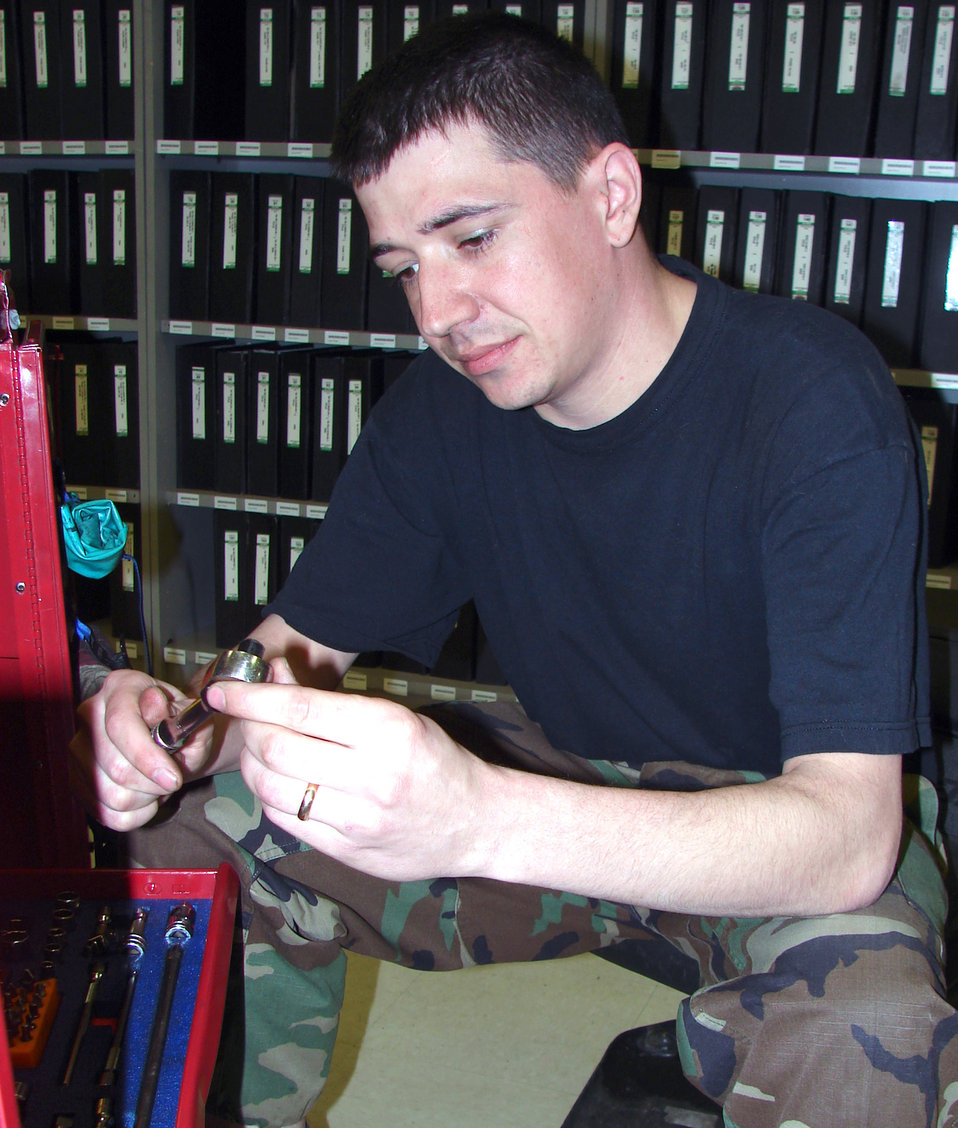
Dyess' aircraft maintainers meet AFSO 21 head on

Staff Sgt. Johnathan Kovar organizes his toolbox Feb. 27 in the newly consolidated aircraft maintenance support flight at Dyess Air Force Base, Texas. Combining two maintenance units on the base has cut task time in half for maintainers and support specialists here. Sergeant Kovar is a support flight specialist with the 7th Aircraft Maintenance Squadron.